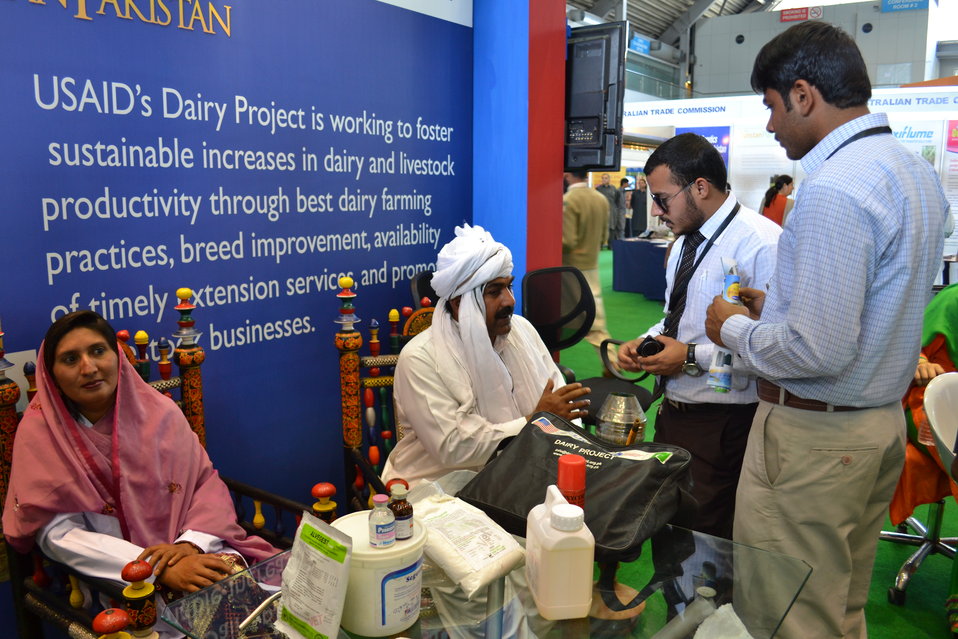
Dairy Project at Dawn Expo 2014